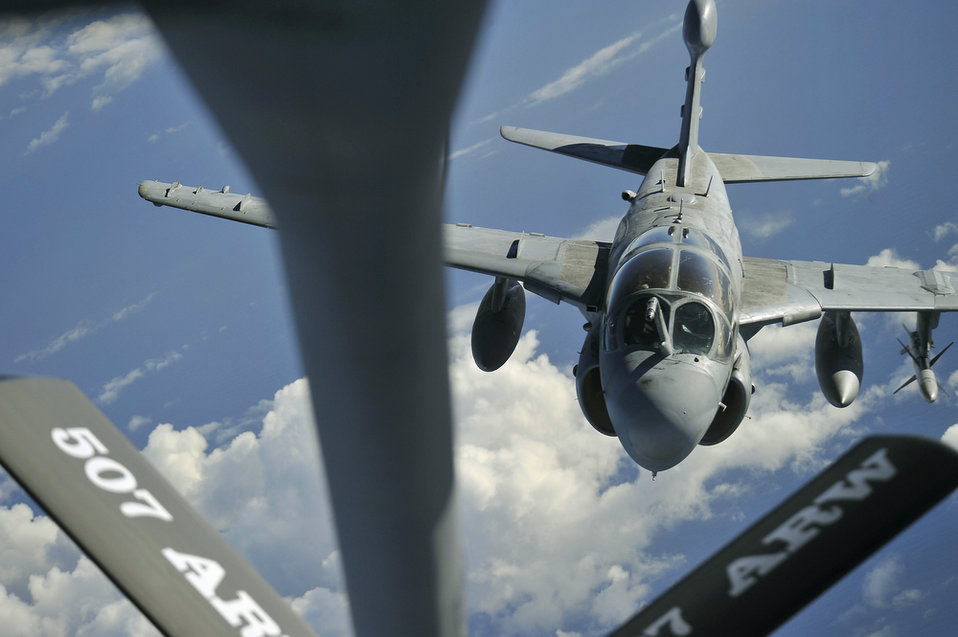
Refuelers keep aircraft flying during exercise

A U.S. Navy EA-6 Prowler flying over Hawaiian air space July 20, 2010, moves into position to receive fuel from a KC-135 Stratotanker from the 507th Air Refueling Wing at Tinker Air Force Base, Okla., during the Rim of the Pacific exercise. RIMPAC, the world's largest maritime exercise, is a biennial event which stresses interoperability among the 14 nations participating in the exercise. The tanker is staging out of Joint Base Pearl Harbor-Hickam, Hawaii.